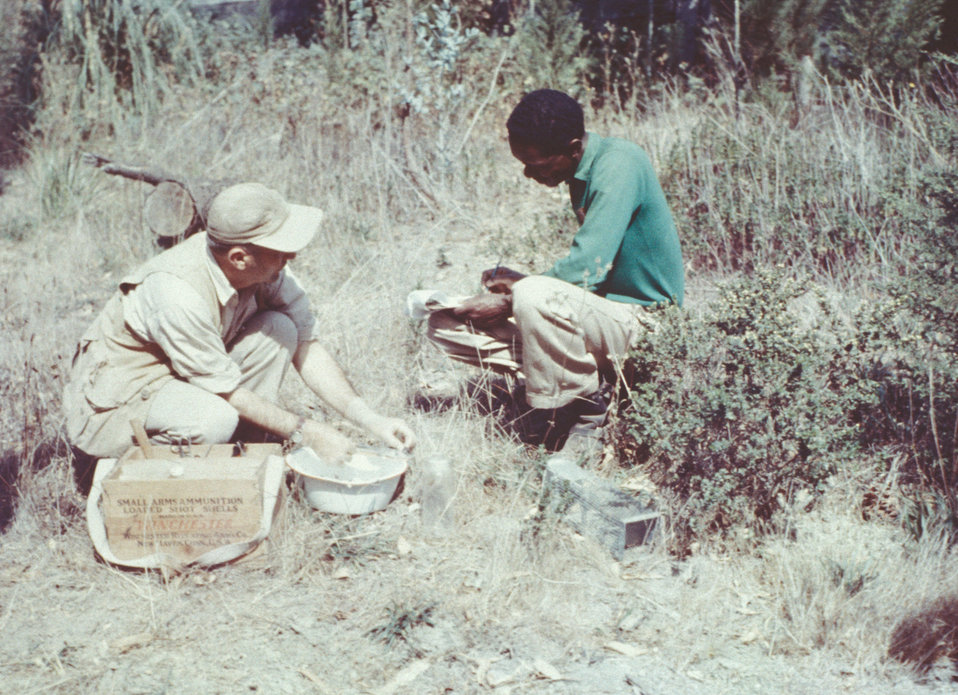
Men conducting a plague study in the San Francisco area by capturing vector-carrying rodents.